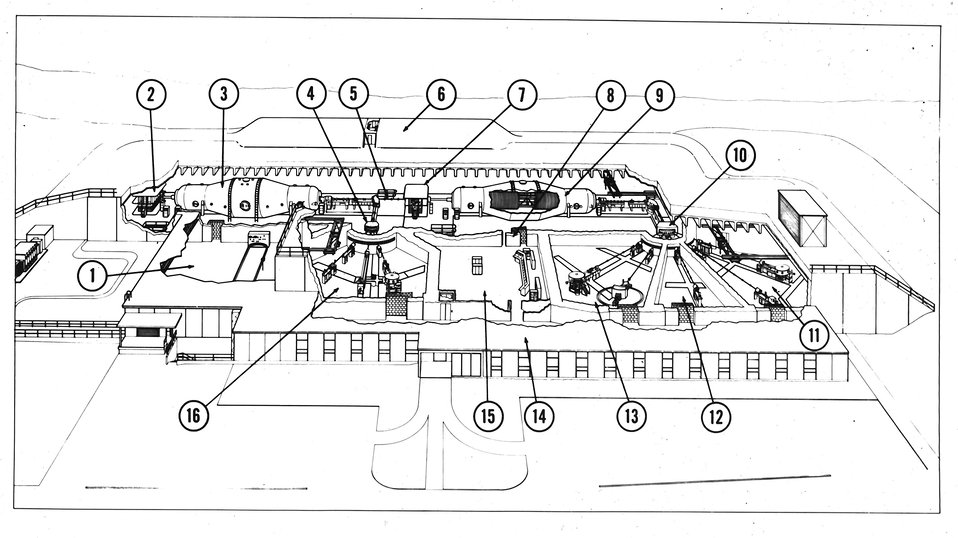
Shown in this cut-away view of the tandem Van de Graaff facility are two model MP Tandem Van de Graaff electrostatic accelerators. c. 1971